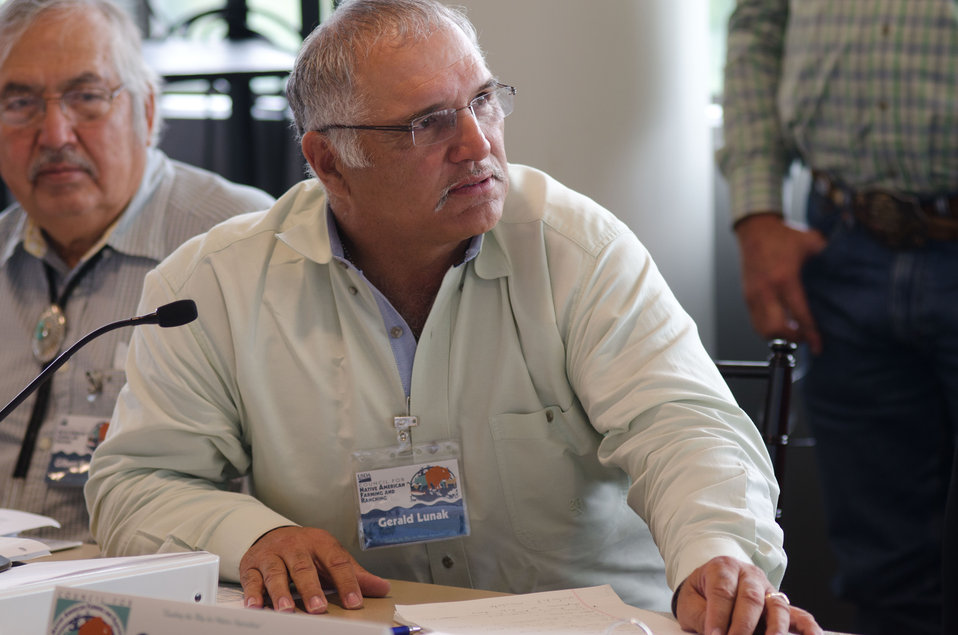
Natural Resources Director for Blackfeet Nation of Cut Bank, MT Gerald Lunak speaks at the first business meeting of the U.S. Department of Agriculture’s (USDA) Council for Native American Farming and Ranching (CNAFR) held at the National Museum of the American Indian in Washington, D.C. on Tuesday, Aug. 14, 2012. CNAFR was created to advise the Secretary on ways to eliminate barriers to participation for Native American Farmers and Ranchers in USDA programs. The Council was established as part of the Keepseagle settlement, and is conducted under the oversight of USDA's Office of Tribal Relations under the Office of the Secretary of Agriculture.